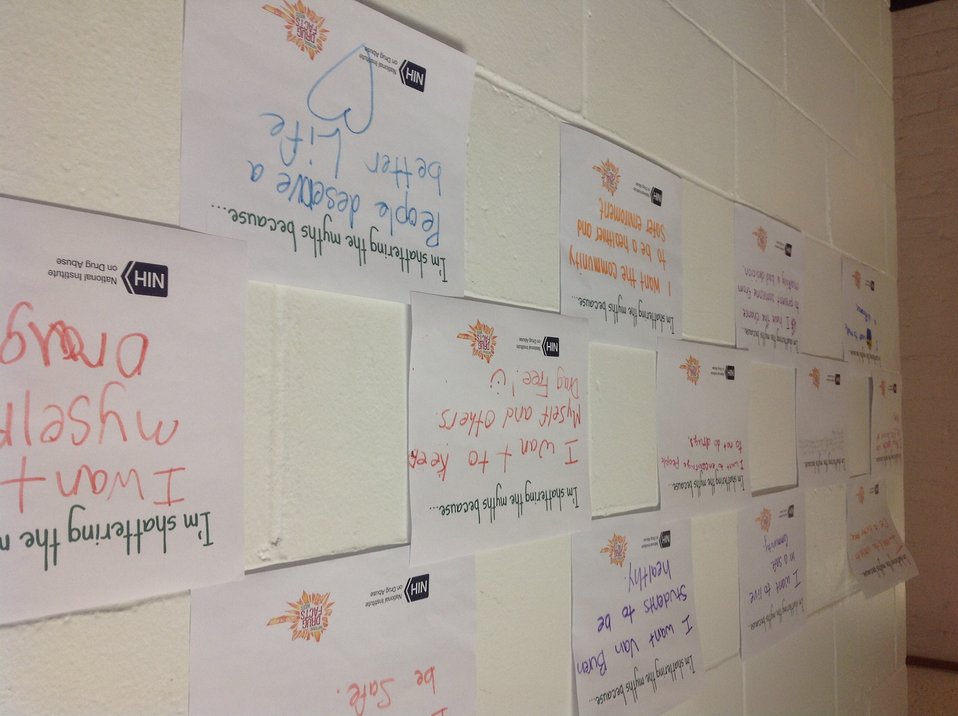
I'm Shattering the Myths Because...

Teenagers from the Van Buren County SAFE Coalition's, Youth Leadership Council (YLC) in Keosauqua, Iowa participate in various events during National Drug Facts Week, 2014.